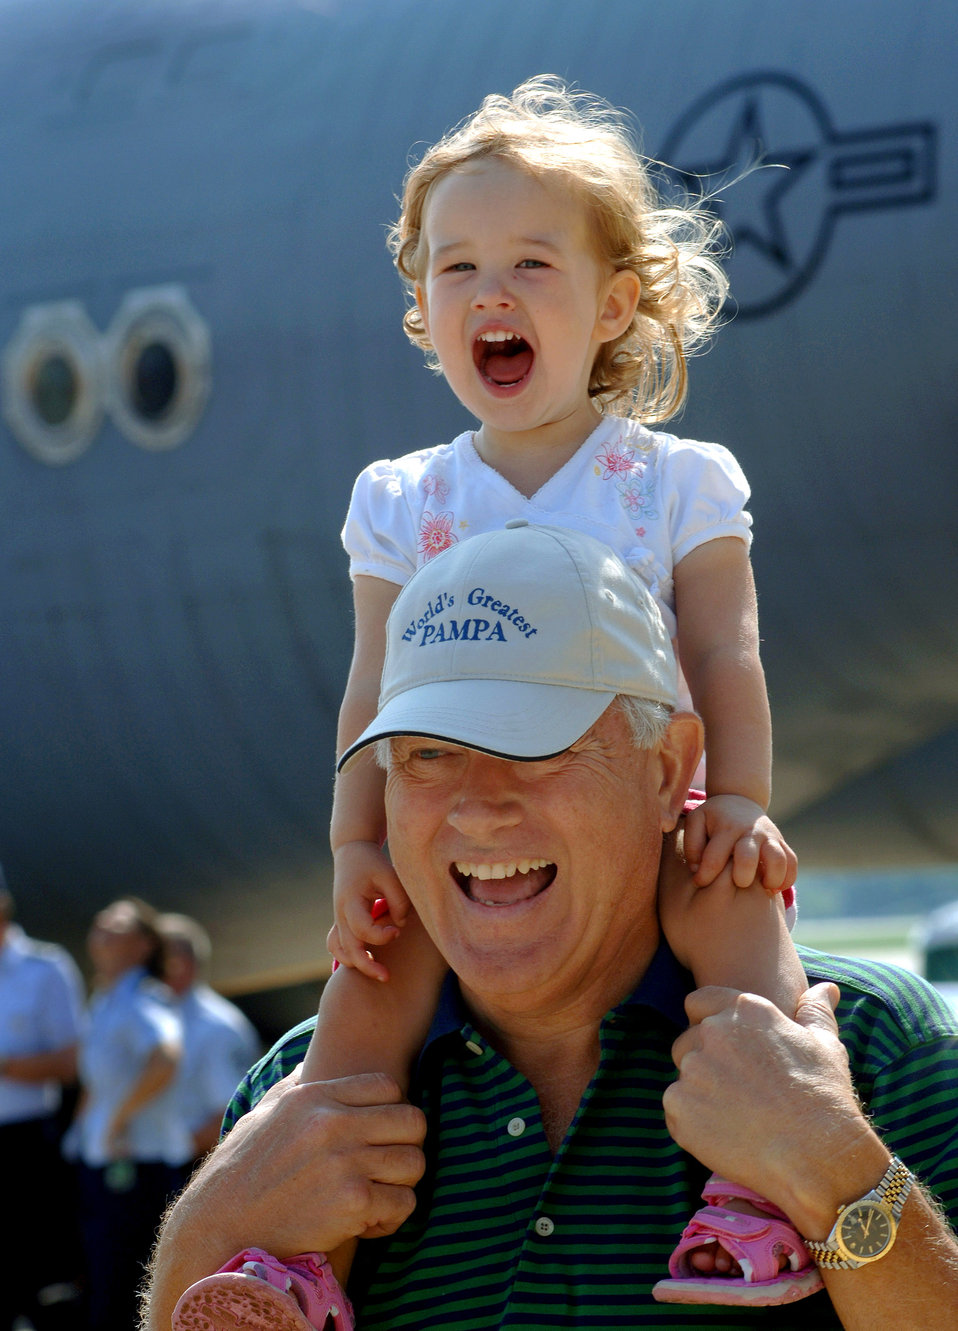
Pease Airmen provide a day to remember

Two-year-old Audrey Perron of Nottingham, N.H., sits on the shoulders of her grandfather, Tom Elam from Dallas, as they cheer for the U.S. Air Force Honor Guard Drill Team during a performance for children with special needs Aug. 17 at Pease Air National Guard Base, N.H. The drill team's performance was part of the 2007 Wings of Hope Air Show at Pease in conjunction with Air Force Week New England.